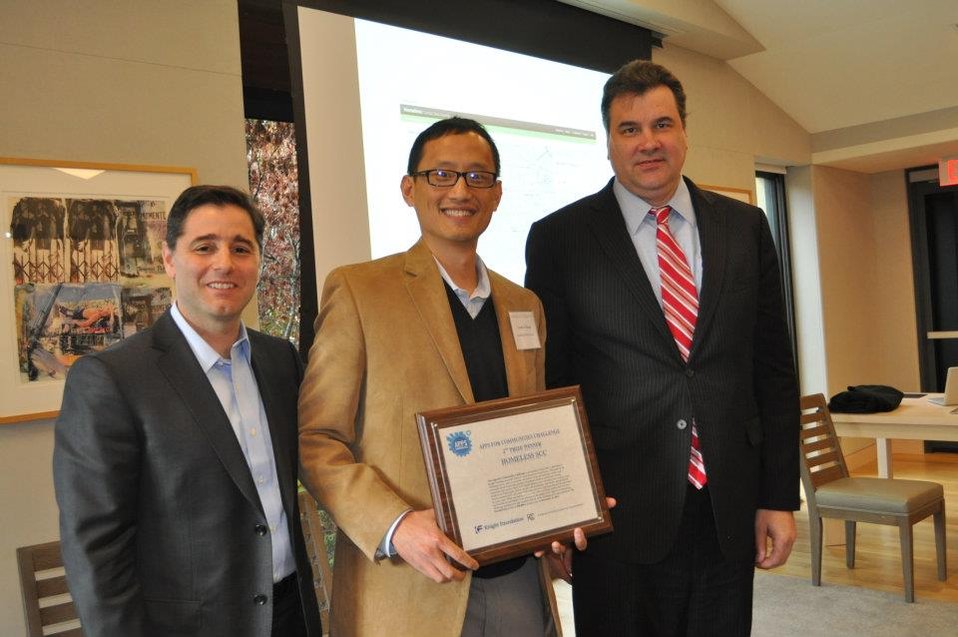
Homeless SCC

Chairman Julius Genachowski and Knight Foundation National Program Director Damian Thorman congratulate Apps for Communities second place winner, Homeless SCC.